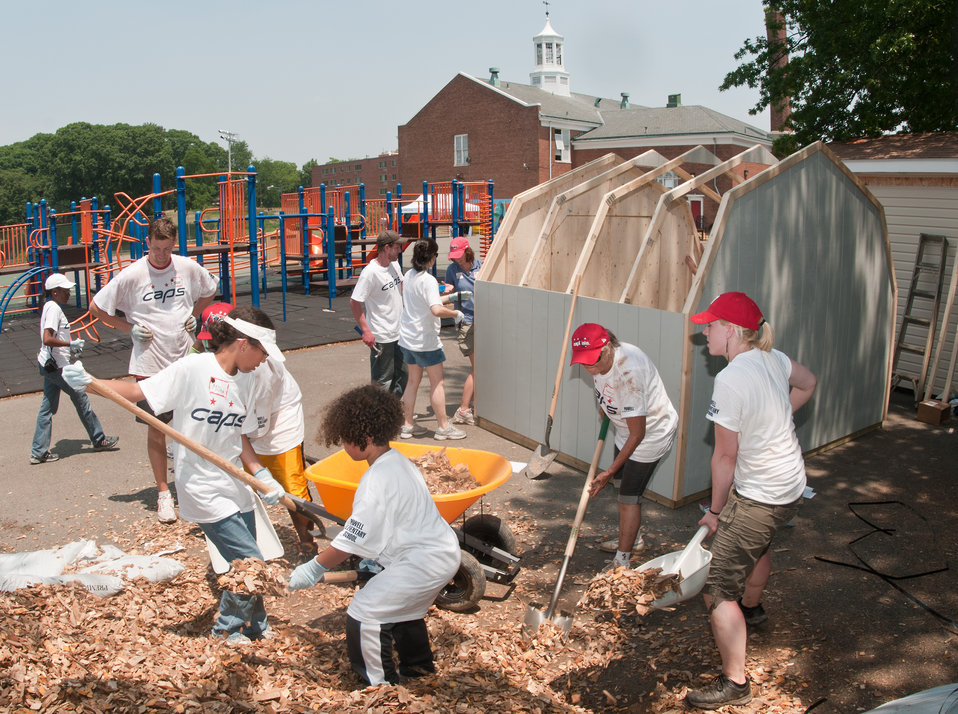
Volunteers shovel wood chips into a wheel barrel, while another team connects the sides of a new tool shed in the People’s Garden, at William B. Powell Elementary School on Thursday, June 9, 2011 in Washington, DC. Volunteers from U.S. Department of Agriculture People’s Garden Executive Master Gardener program and Washington Capitals hockey organization, along with defenseman Jeff Schultz, and mascot Slapshot transformed a grassy corner of the school playground into a habitat garden and outdoor learning area. Executive Master Gardeners led the volunteer project teams. The Washington Capitals donated new tools; tool shed; garden materials; lunch; most of the volunteers and more. The completed projects included a walking path; tiling of garden plots; planting a bird habitat garden, pollinator garden and native grasses; caterpillar and butterfly plaques; hummingbird and bat house, and tool shed. The garden will later include a picnic area, outdoor classroom, hummingbird garden, Monarch watch garden, native bee garden, and birdbath. USDA challenges its employees to establish People's Gardens at USDA facilities worldwide or on this case, help communities create gardens. People's Gardens vary in size and type, but all have a common purpose - to help the community and the environment.